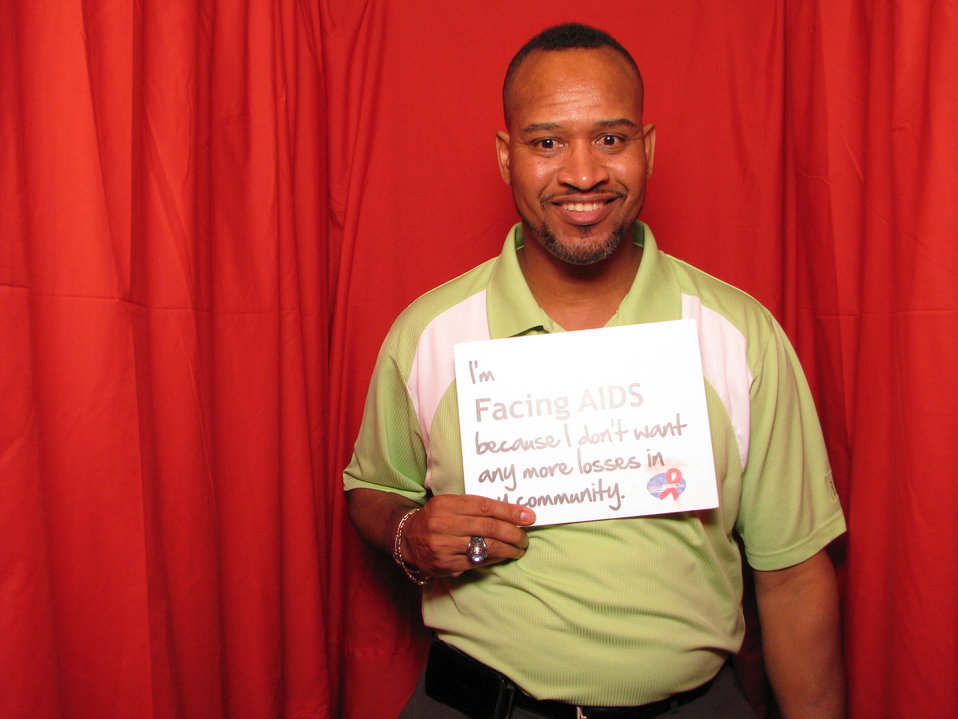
I'm FACING AIDS because I don't want any more losses in my community.

From the AIDS.gov photo booth at the U.S. Conference on AIDS, September 2010 (Orlando, FL).